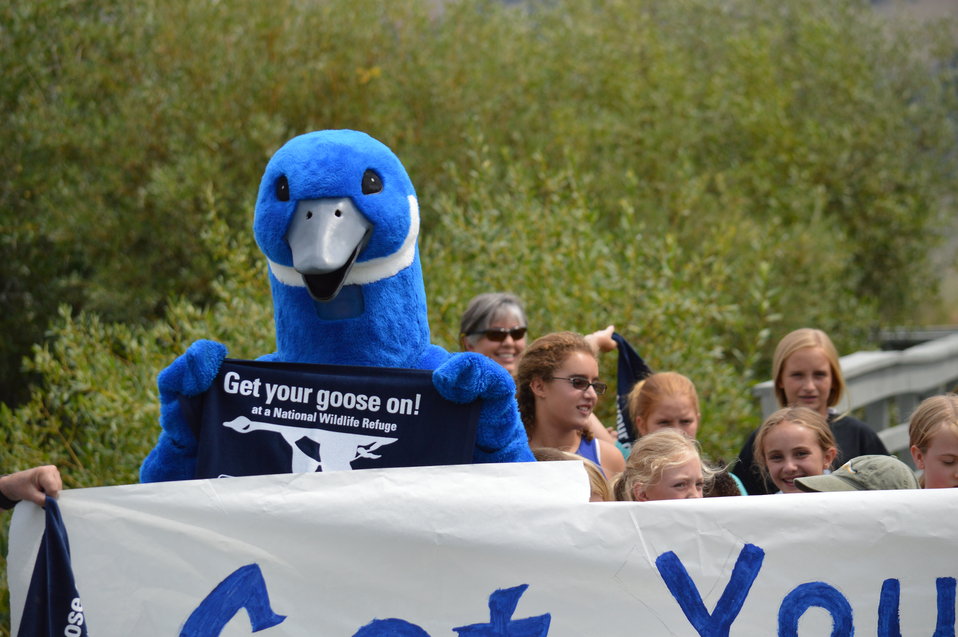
Get Your Goose On! - National Elk Refuge Style

On August 10, 2012 the U.S. Fish and Wildlife Service and Partners celebrated the 100 year anniversary of the establishment of the National Elk Refuge. In these photos, young attendees, along with Puddles the Blue Goose and the National Elk Refuge's mascot, showed us how to Get Your Goose On! with style.